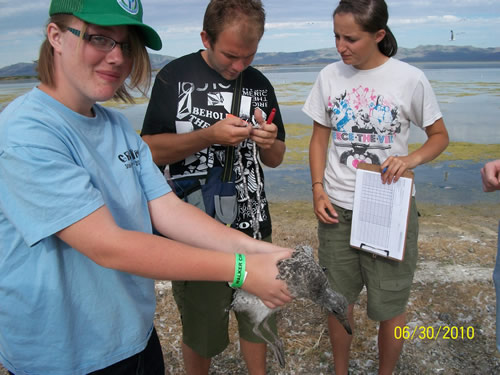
Youth Conservation Corps crew and students conduct bird research

Youth Conservation Corps participants help students form Weber State University conduct bird research. The YCC crew looked for nests, banded chicks and assisted with vegetation data collection.